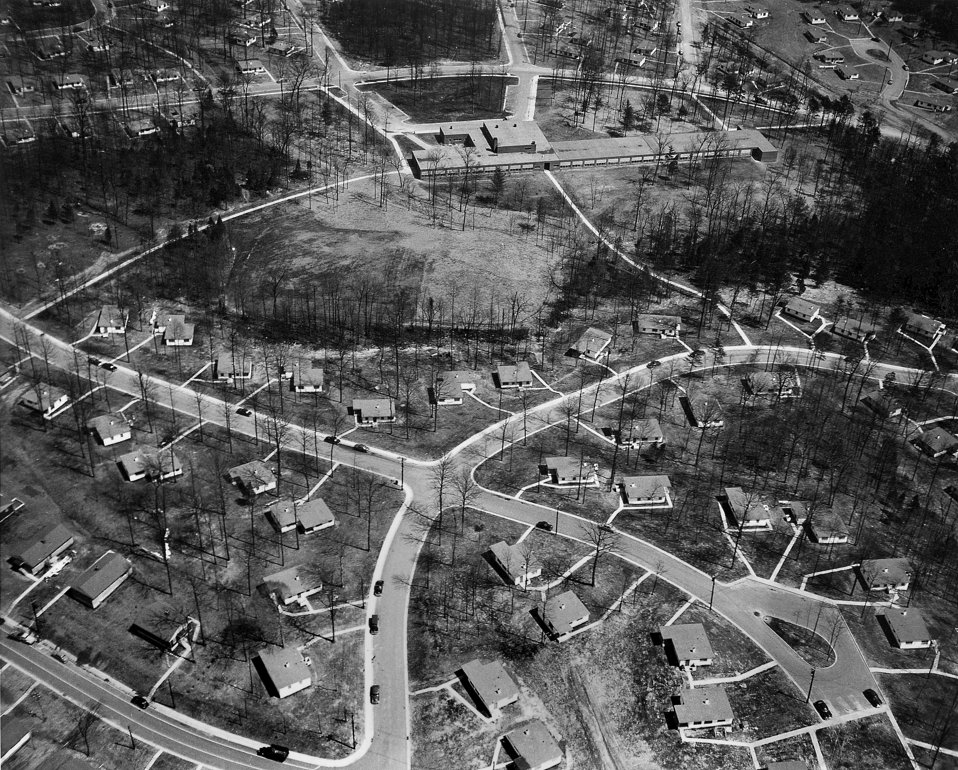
Woodland Housing and School Wooland Area Oak Ridge

6331 DOE photo Ed Westcott

Woodland Housing and School Wooland Area Oak Ridge Tennessee April 1950